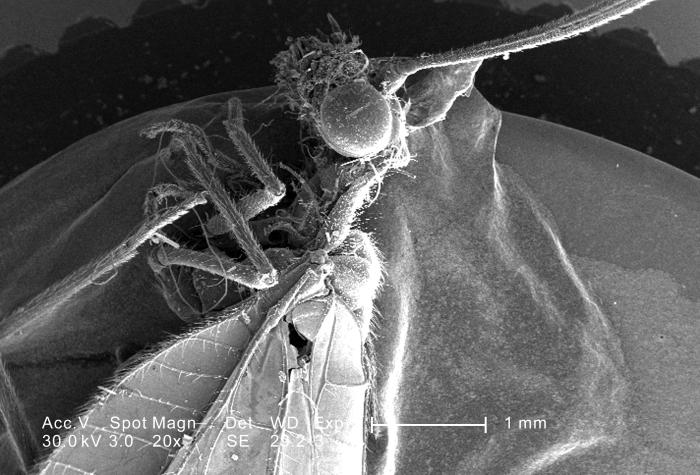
This scanning electron micrograph (SEM) depicted a magnified lateral view of an unidentified green-colored flying insect found outside on the ground in the Decatur, Georgia suburbs; Magnified 20x.